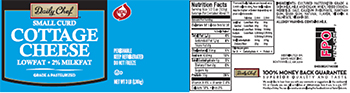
RECALLED – Cottage Cheese products

May 17, 2014 – Product Recall – Kraft Foods Group Voluntarily Recalls Select Cottage Cheese Products Due to Out-of-Standard Storage Temperatures
Certain Knudsen Cottage Cheese, Breakstone’s Cottage Cheese, Simply Kraft Cottage Cheese and Daily Chef Cottage Cheese Products Included in the Recall
.